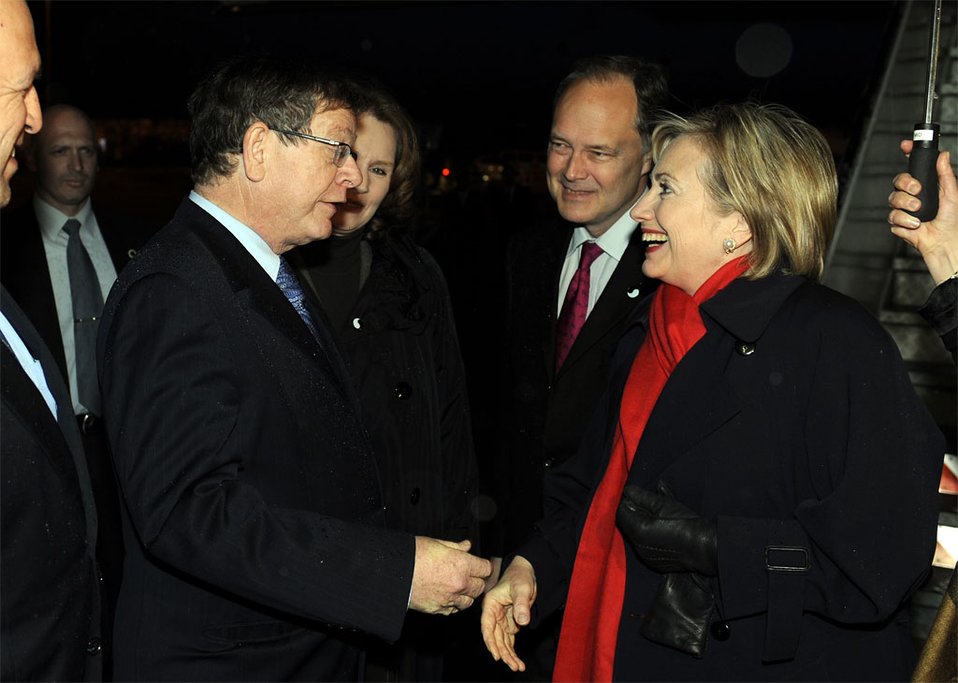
Secretary Clinton Arrives in Jerusalem

U.S. Secretary of State Hillary Rodham Clinton is being welcomed by Mr. Baruch Binah, Deputy Director General for the North American Department, Ministry of Foreign Affairs at Ben Gurion Airport, Israel March 2, 2009.